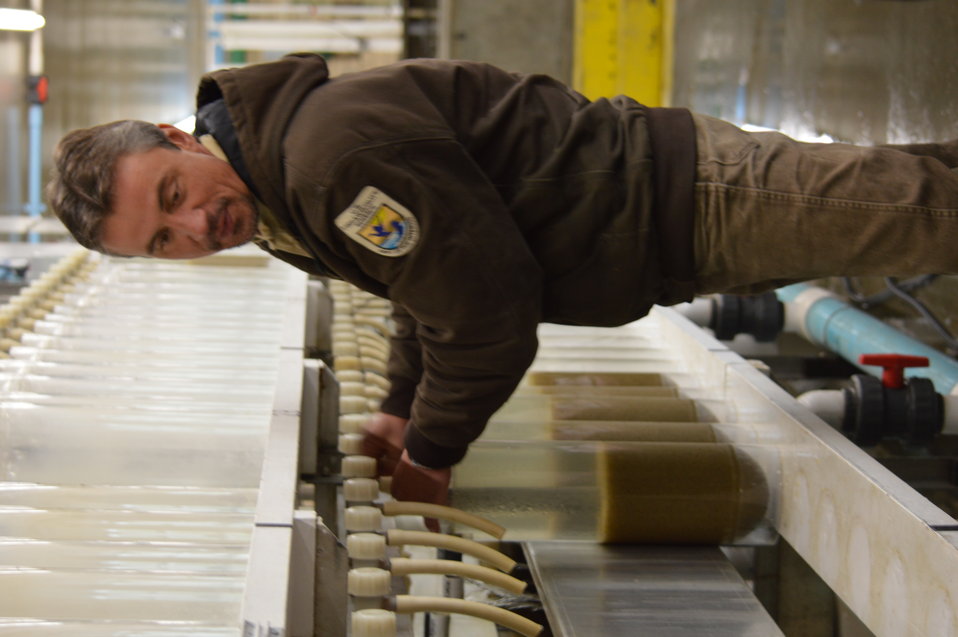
Service employee with eggs

Garrison Dam National Fish Hatchery in North Dakota.